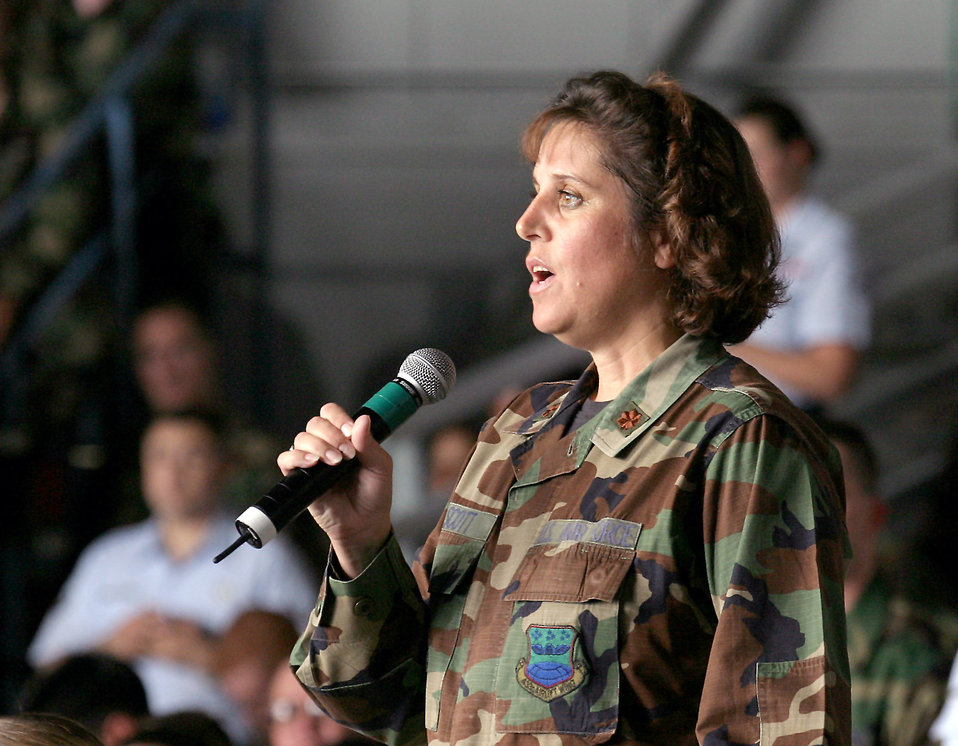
Scott

LACKLAND AIR FORCE BASE, Texas -- Maj. Michaelene Scott asks Secretary of Defense Donald Rumsfeld a question during a town hall meeting here Aug. 25. Rumsfeld addressed about 3,500 servicemembers from installations in the San Antonio area. Scott is a reservist assigned to 433rd Logistics Readiness Squadron.